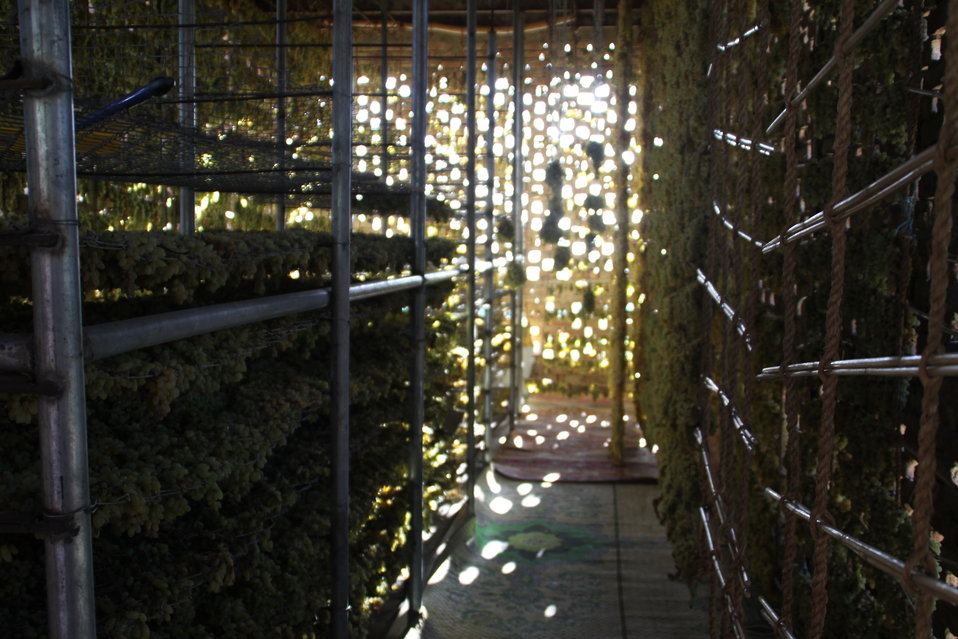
AVIPA Plus Wheat Seed Distribution 101005

US Ambassador Karl Eikenberry and USAID Acting Mission Director Kevin Brownawell joined the Minister of Agriculture, Irrigation and Livestock, H.E. Minister Mohammed Rahimi in signing a Memorandum of Understanding and distributing vouchers to area farmers for wheat and fertilizer.